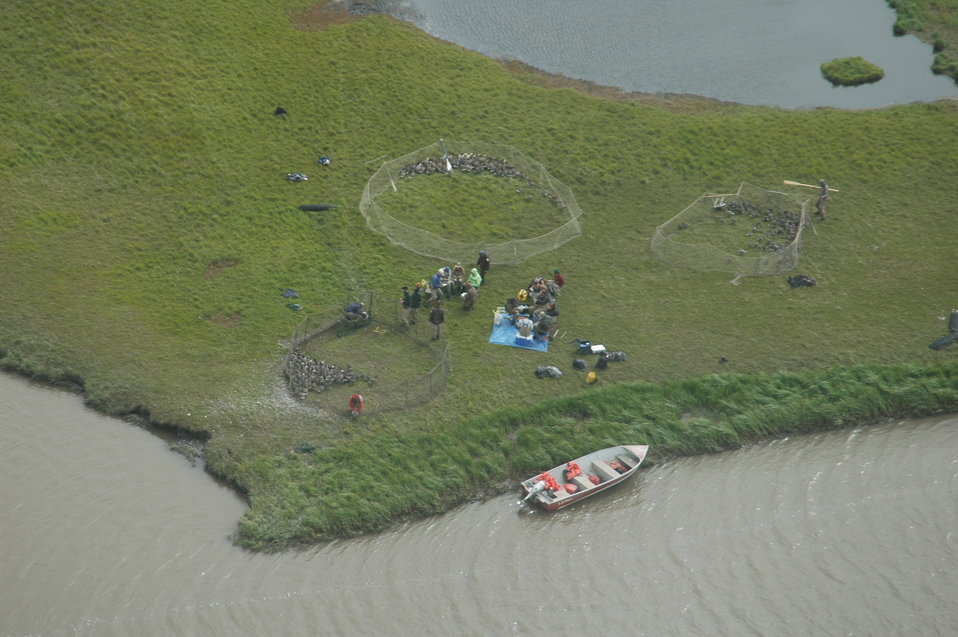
Aerial view of holding pens

A group of biologists, volunteers, biotechs, refuge staff, migratory bird management staff, etc joined forces to band and collar cackling cackling geese on the Yukon-Kuskokwim Delta.

Geese are put into holding pens until all of the captured birds have been processed.

USFWS Yukon Delta NWR